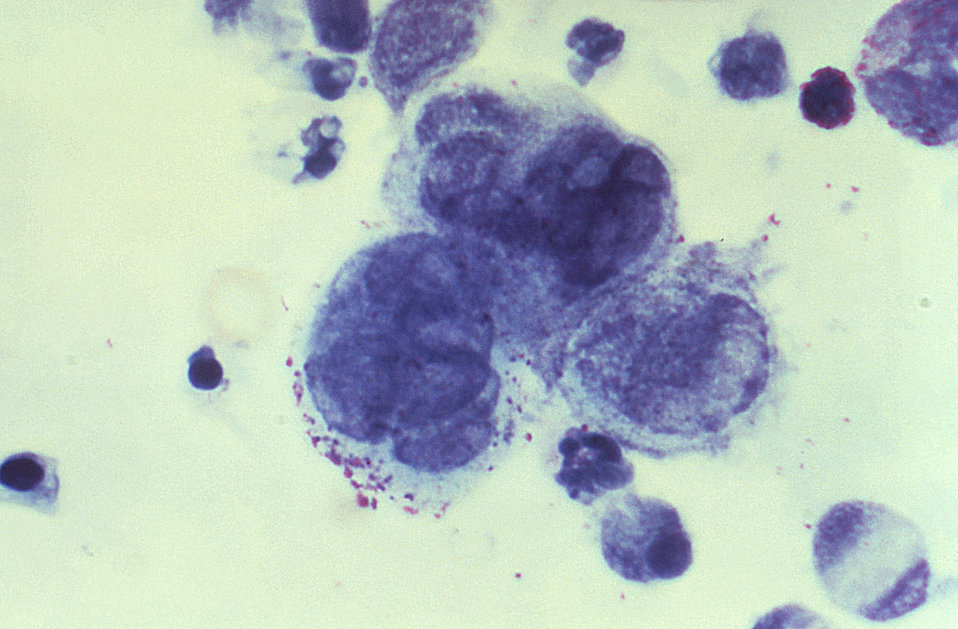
This micrograph depicts results indicating the presence of herpes simplex virus in a Tzanck test specimen from a penile lesion.